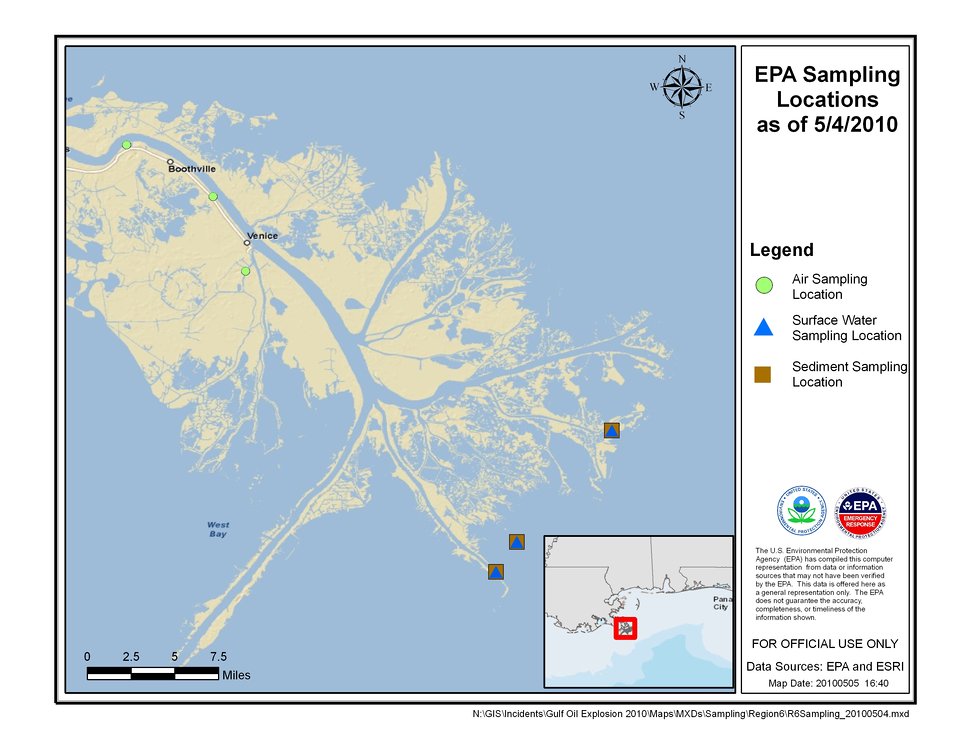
EPA Sampling Locations May 4, 2010